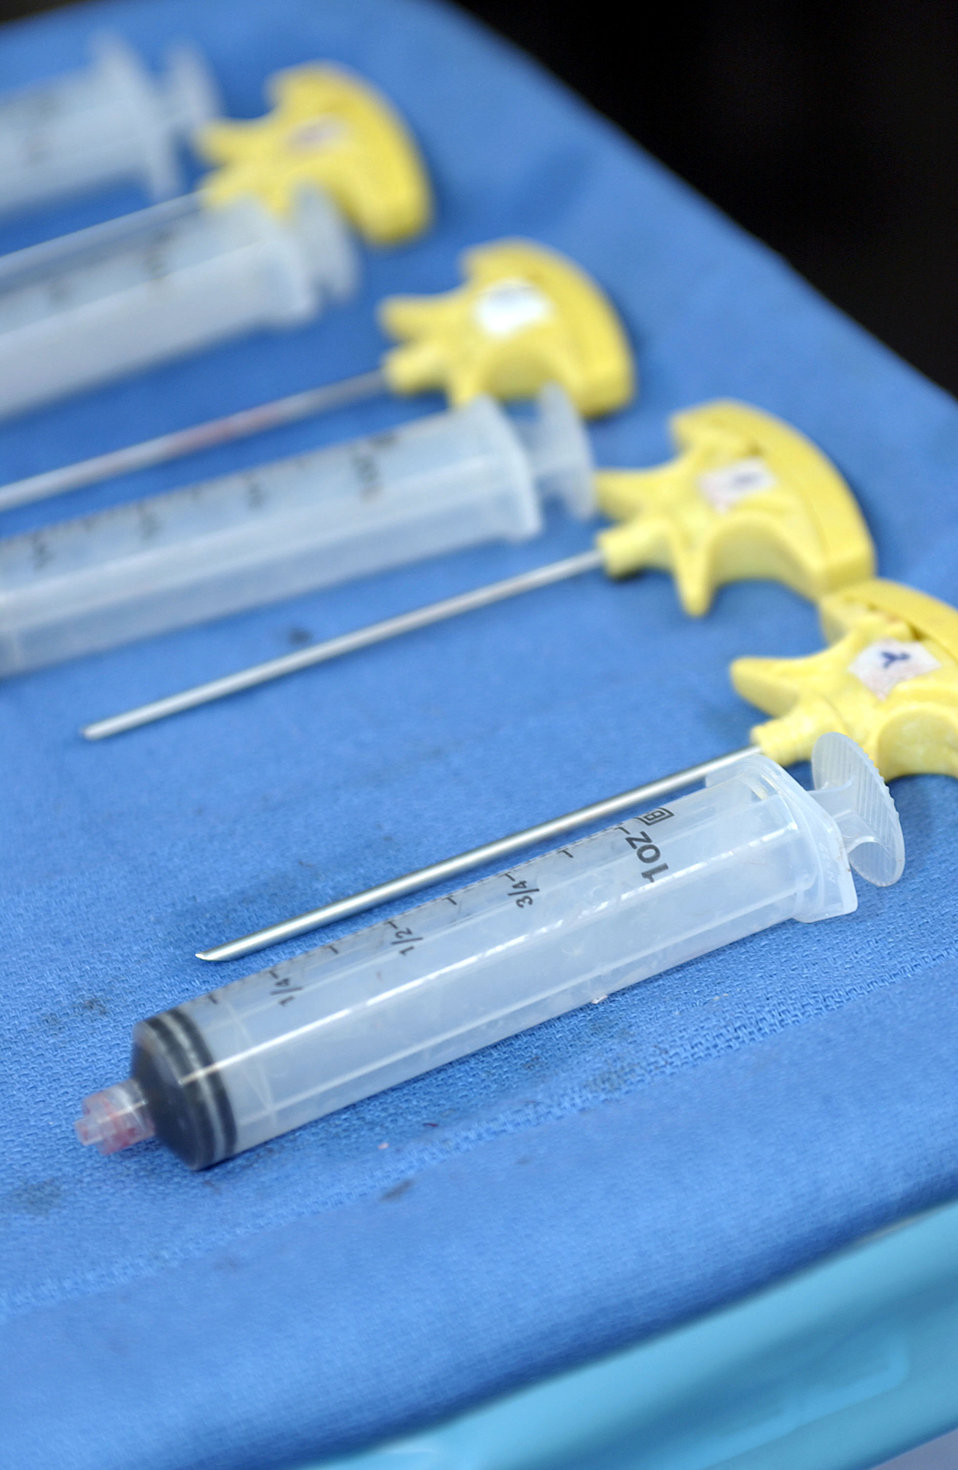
Captain's marrow saves life

WASHINGTON -- Special needles and syringes are lined up for use in the bone marrow harvest procedure. The needle must penetrate the pelvic bone to reach the life-saving marrow inside. The marrow Capt. Brent Davis donated will aid a 17-year-old boy in his recovery from non-Hodgkin's lymphoma, a type of cancer. Captain Davis is the 910th Airlift Wing public affairs chief at Youngstown Air Reserve Station, Ohio.